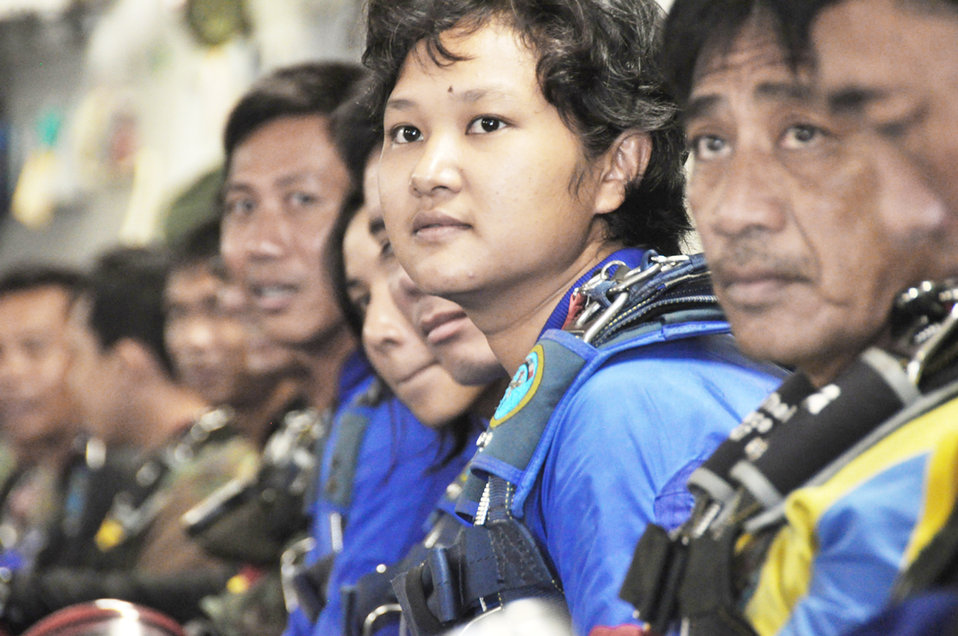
COPE TIGER 2010

A Royal Thai Air Force parachute team members prepares for 10,000-foot high altitude-low opening jump from the back of a C-17 Globemaster III during Cope Tiger 2010 March 3, 2010 at Dom Muang Royal Thai Air Force Base, Thailand.